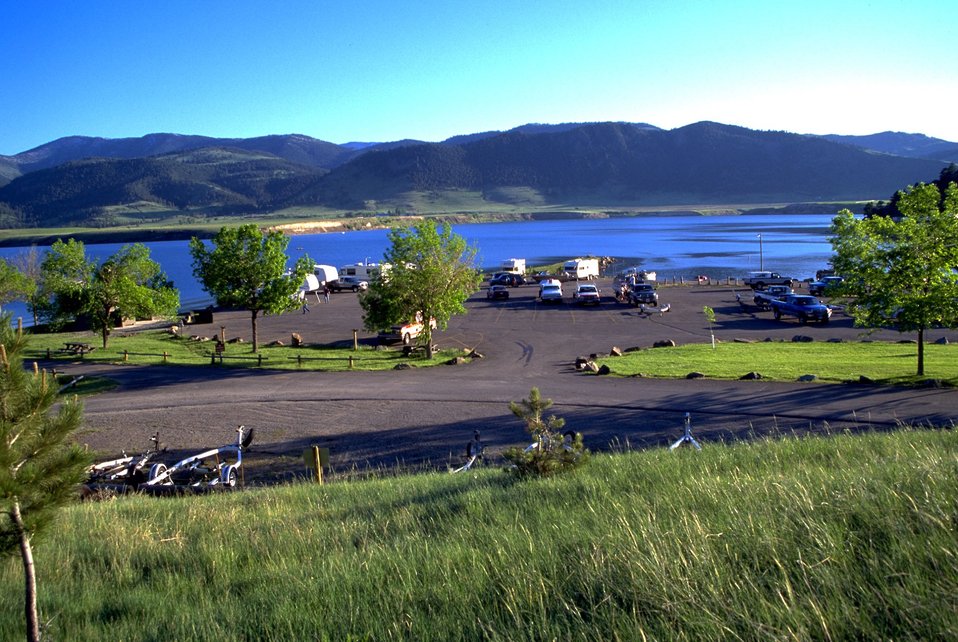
The parking area at Holter Lake Recreation Site